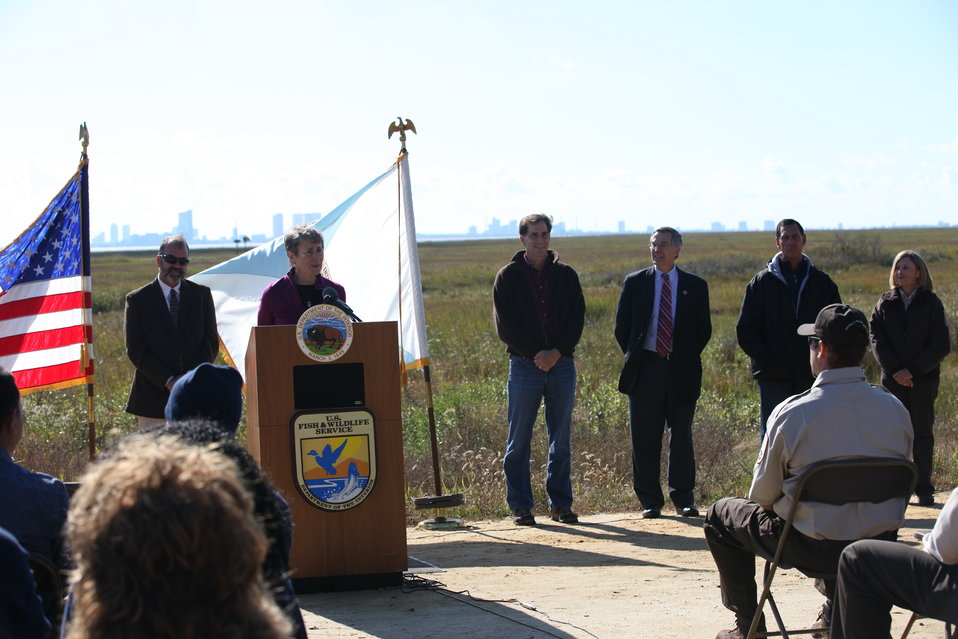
Secretary Sally Jewell speaking at Edwin B. Forsythe National Wildlife Refuge

With Atlantic City in the background, Secretary of the Interior Sally Jewell is joined by Richard Kropp, U.S. Geological Survey (far left), and to her right (l to r) FWS Director Dan Ashe, Congressman Rush Holt, Congressman Frank LoBiondo, and Edwin B. Forsythe National Wildlife Refuge Manager Virginia Rettig, to announce Hurricane Sandy resiliency funding.